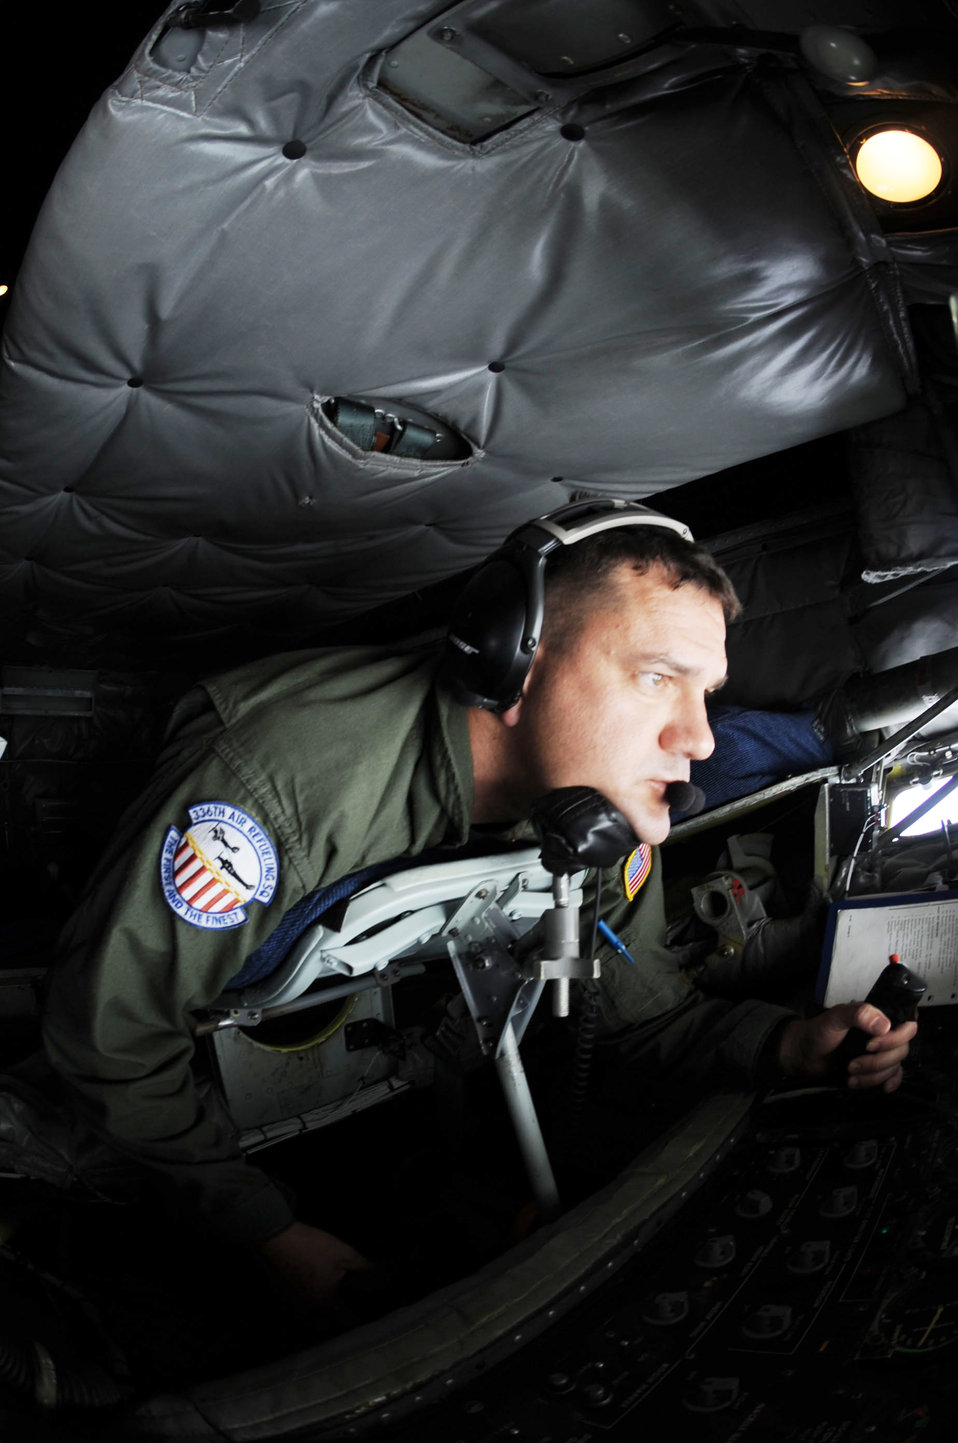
Airmen, KC-135s support exercise in Australia

Master Sgt. Timothy Preston controls the boom of a KC-135 Stratotanker as a B-52 Stratofortress approaches to refuel July 13 over the Pacific Ocean during Talisman Saber 09. Sergeant Preston is a refueling specialist in the 506th Expeditionary Refueling Squadron at Andersen Air Force Base, Guam.